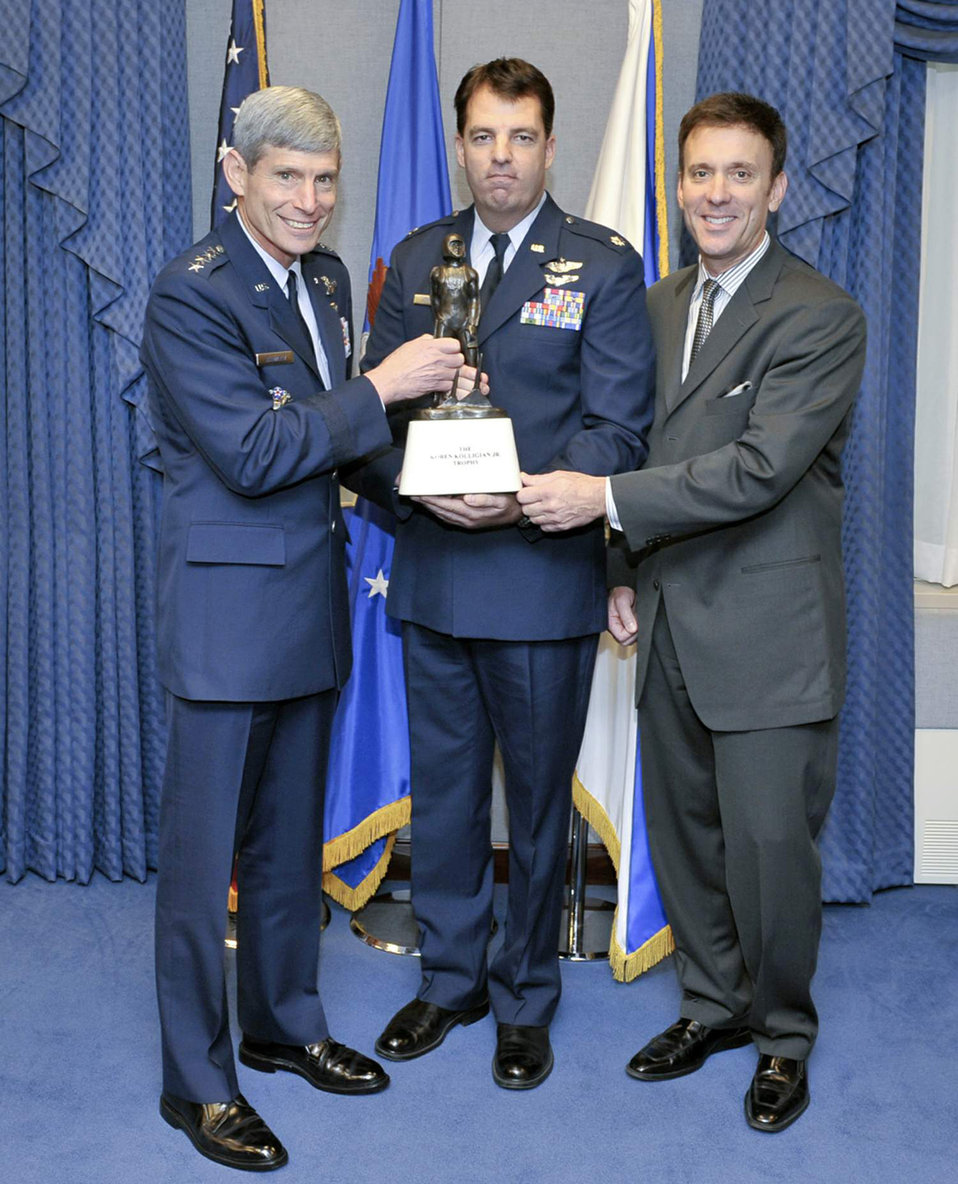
F-16 pilot receives Kolligian safety award

Air Force Chief of Staff Gen. Norton Schwartz assisted by Koren Kolligan presents Lt. Col. Booth M. Johnston with the Koren Kolligian Jr. Safety Trophy June 16. He received the award for an October 2007 incident in which he suffered a severe back and neck injury during a high-G maneuver. Despite the near total loss of use and lack of sensation in his hands and feet, Colonel Johnston was eventually able to level the aircraft and land at Ellington Field, Texas.